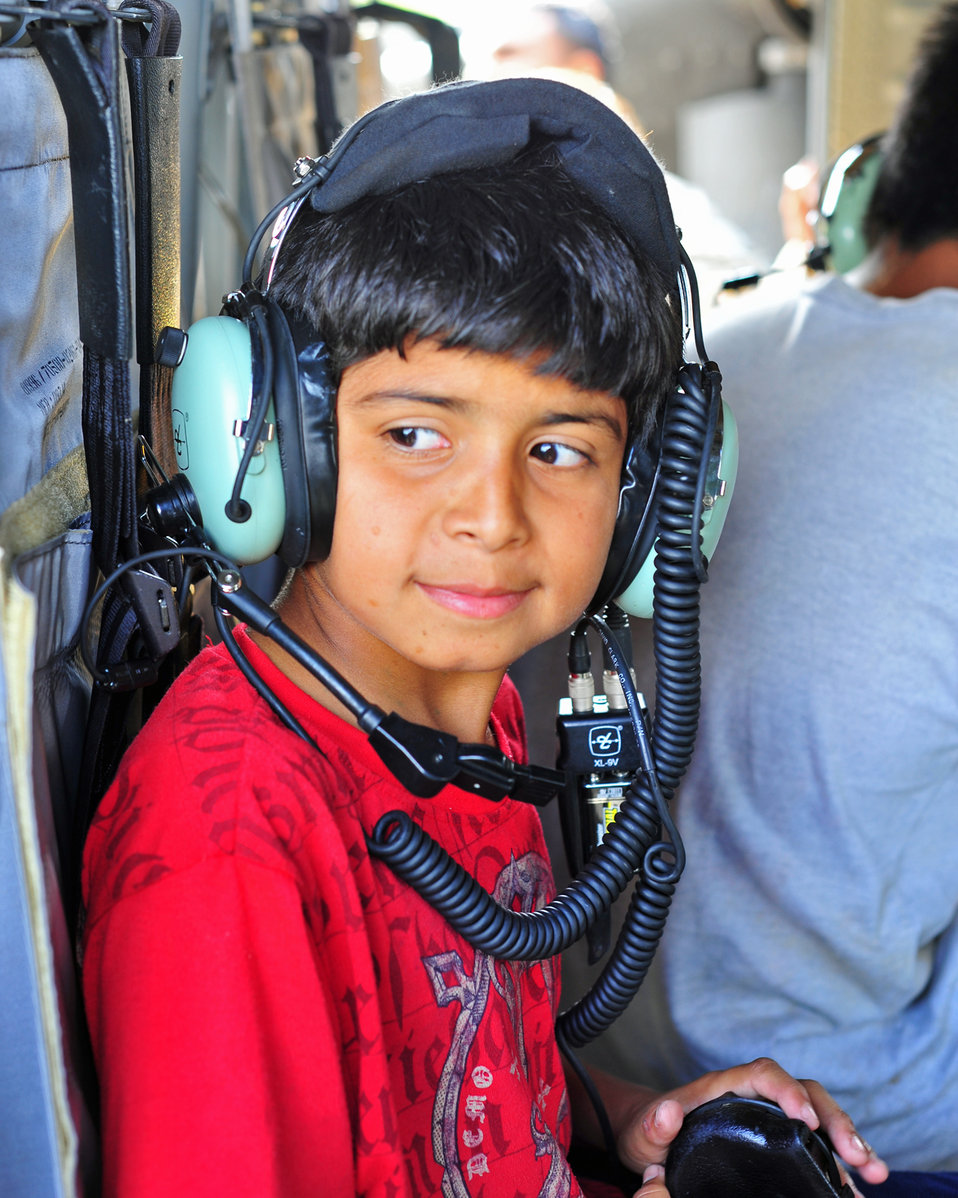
JTF-Bravo medics provide care in Belize

While residents from Bella Vista, Belize, waited to see medical providers, some of them took time out to tour the 1st Battalion, 228th Aviation Regiment helicopters that brought the joint medical readiness training exercise team to the site Feb. 28, 2012. The medical team was made up of members from the Belize Ministry of Health, Belizean military and Joint Task Force-Bravo, the latter of which is out Soto Cano Air Base, Honduras.